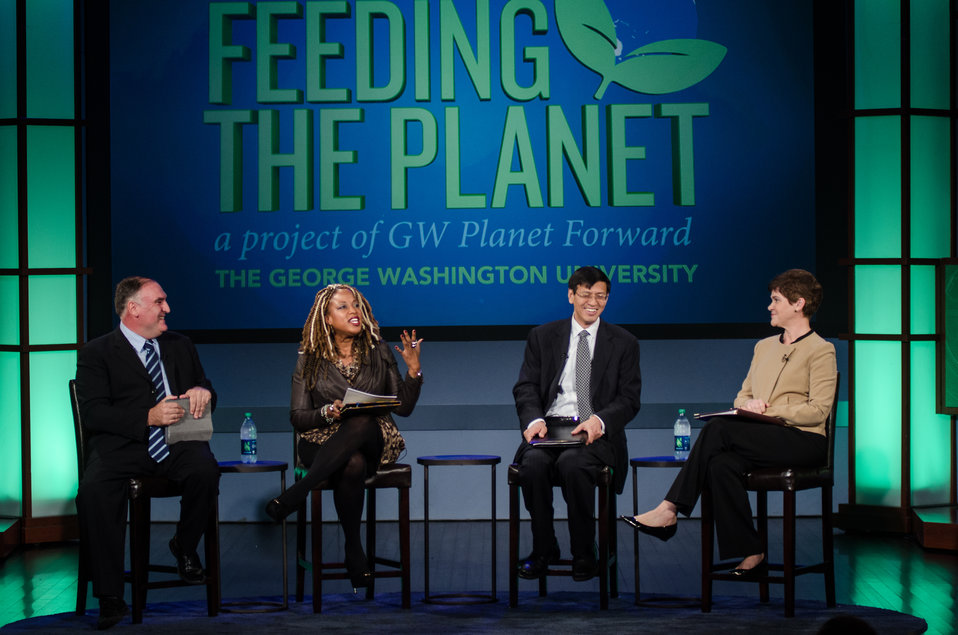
Left to right; Marie Nelson, Senior Director and Executive Producer of News and Original Programming, BET Networks, Moderator, Jose Andres, Chef/Owner of ThinkFoodGroup, Founder of World Central Kitchen, and Culinary Creator and Advocate, Shenggen Fan, Ph.D. Director General, International Food Policy Research Institute and Krysta Harden, Deputy Secretary of Agriculture on the discussion panel “Policy, Palate, and the Plate-Innovation and how policy can impact practice at the Feeding the Planet Summit of leaders from agriculture, business, finance, academia, Non Governmental Organization, government and media, along with a large contingent of college students to engage around promising innovations in global agriculture and food security. The Summit spotlights transformation and scalable developments in policy, practices and technologies with special attention to related issues of gender, climate change and urbanization at The George Washington University in Washington, DC, on Wednesday, Oct. 31, 2013.